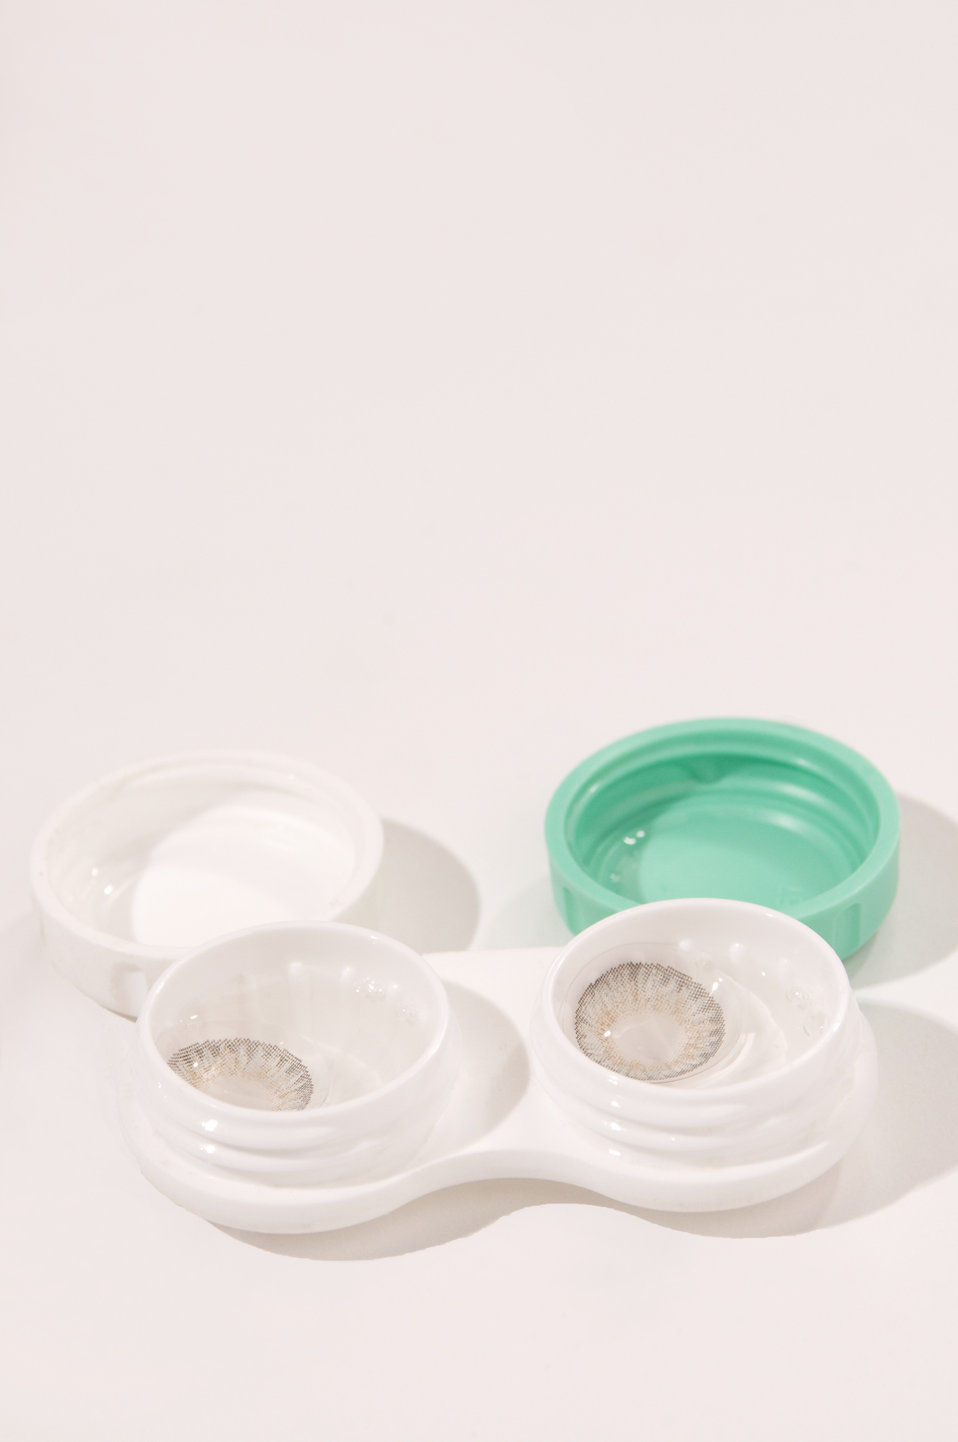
Here we see a clean opened contact lens case revealing its contents, which includes a right and a left lens, each placed in their respective storage solution-filled wells.